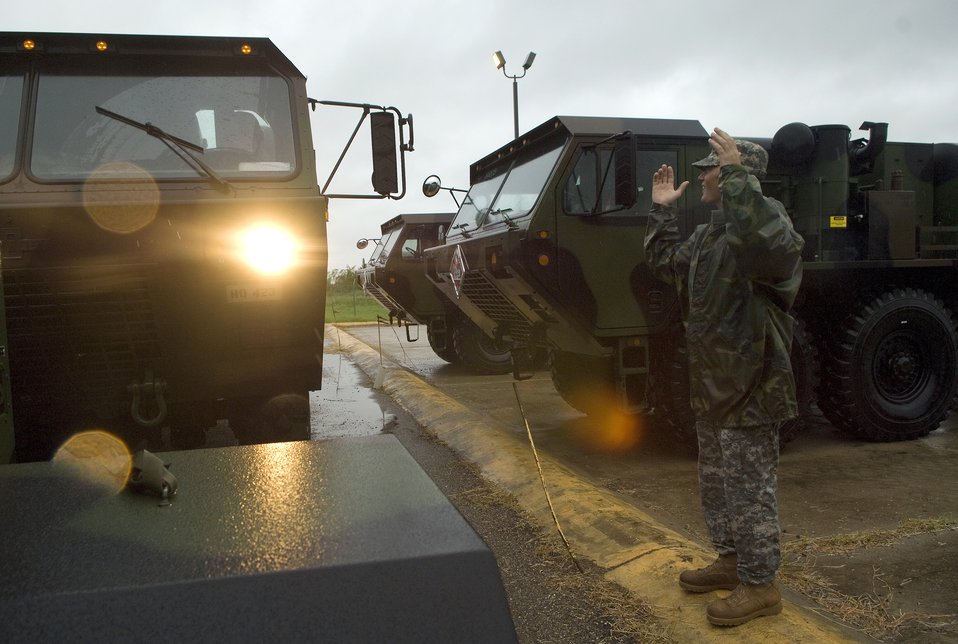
Texas military forces ready for Hurricane Dolly landfall

Army Sergeant 1st Class Jeff Printy marshals in nine light-medium tactical vehicles deployed from San Antonio to the Standing Joint InterAgency Task Force headquarters located at the Army National Guard Armory July 22 in Weslaco, Texas. Texas lilitary forces came to southern Texas in anticipation of heavy flood relief efforts caused by Hurricane Dolly.